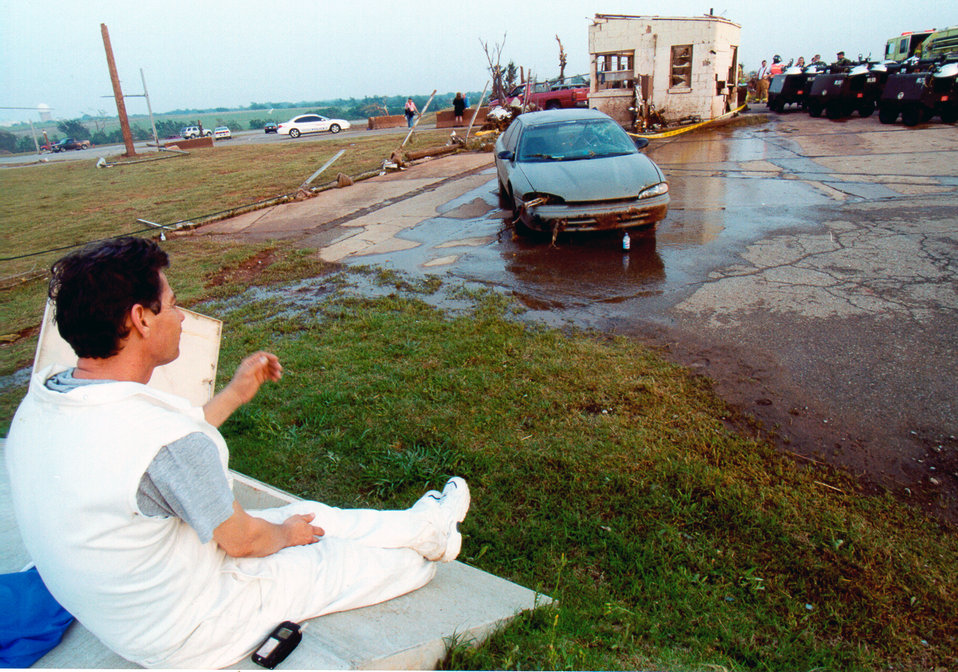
Aftermath

TINKER AIR FORCE BASE, Okla. (AFPN) -- A stunned Antonio Burciaga looks at his wrecked car and considers what his fate might have been if a 72nd Security Forces airman had not forced him to abandon his vehicle and take shelter in a storm cellar here during a tornado.